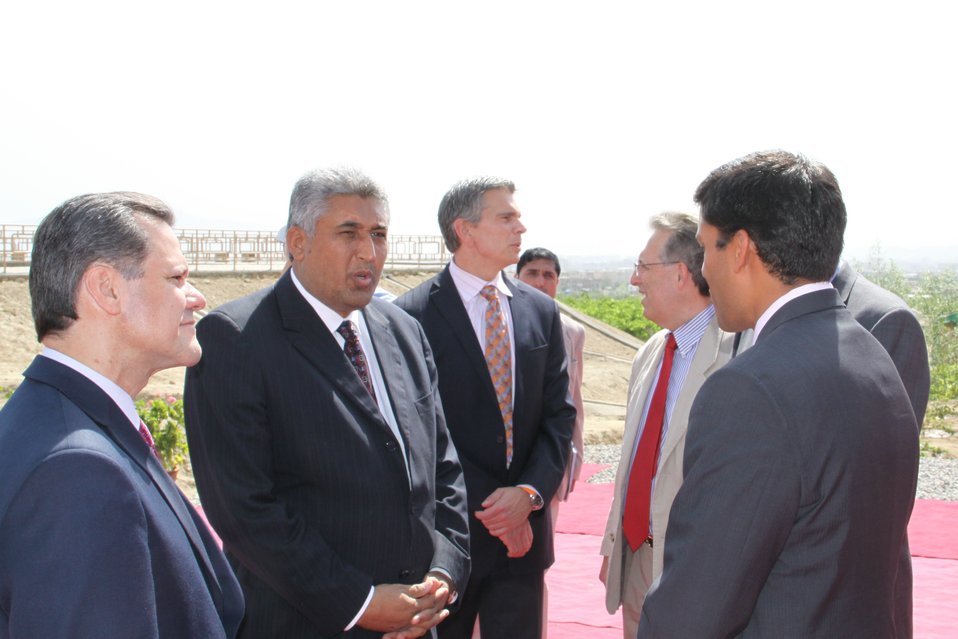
Badam Bagh Farm